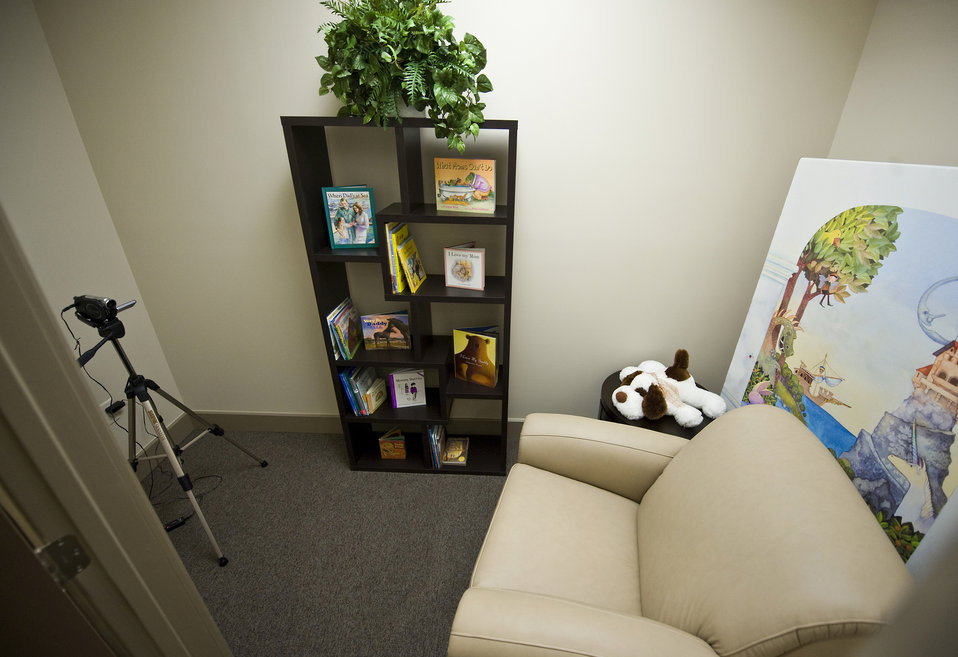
USO reopening in San Antonio

I look inside the USO San Antonio River Center, Apr. 7, of The United Through Reading Room which will provide patrons with the opportunity to record themselves reading a story and personal message to their child or children back home. The USO will mail the recording and book to the service member's family to help them stay connected with their parent away from home.